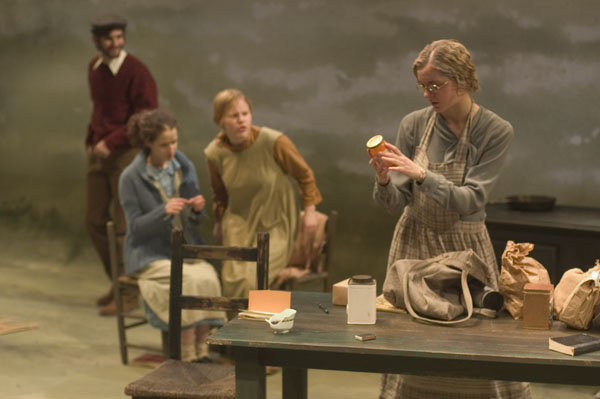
Undergraduate acting students perform in a main stage production of Dancing at Lughnasa